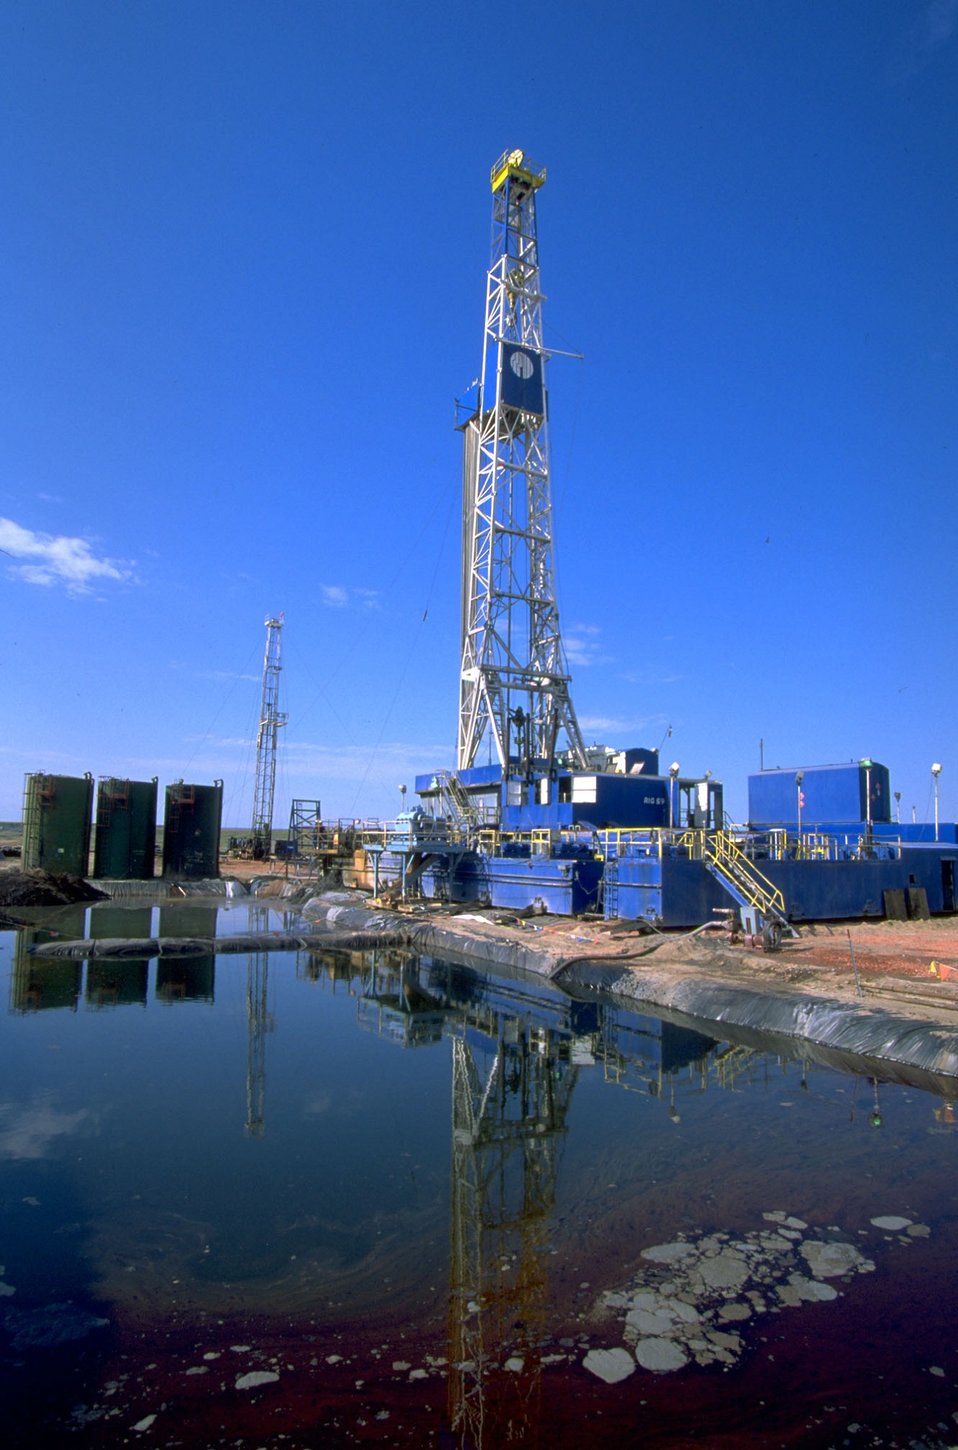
Drilling rig and workover rig on a single pad with reserve pit in the foreground